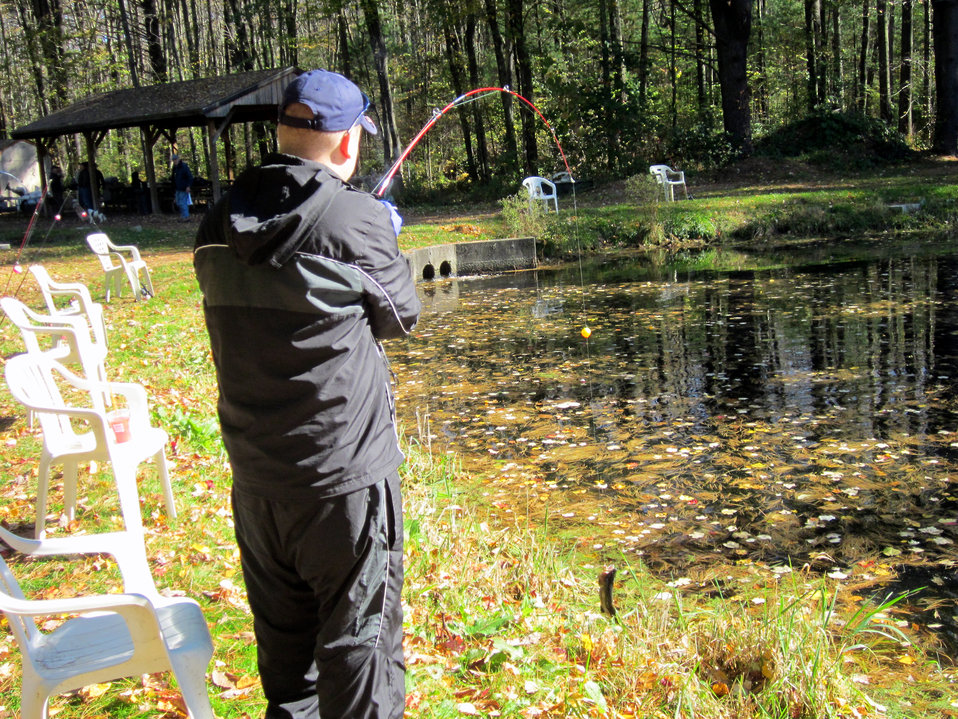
Reeling one in

October 13, 2012, Sunderland, MA: Kenny DeSalvo lands a trout from a pond at the U.S. Fish and Wildlife Service's Richard Cronin National Salmon Station. DeSalvo has been fishing since he was six years old.